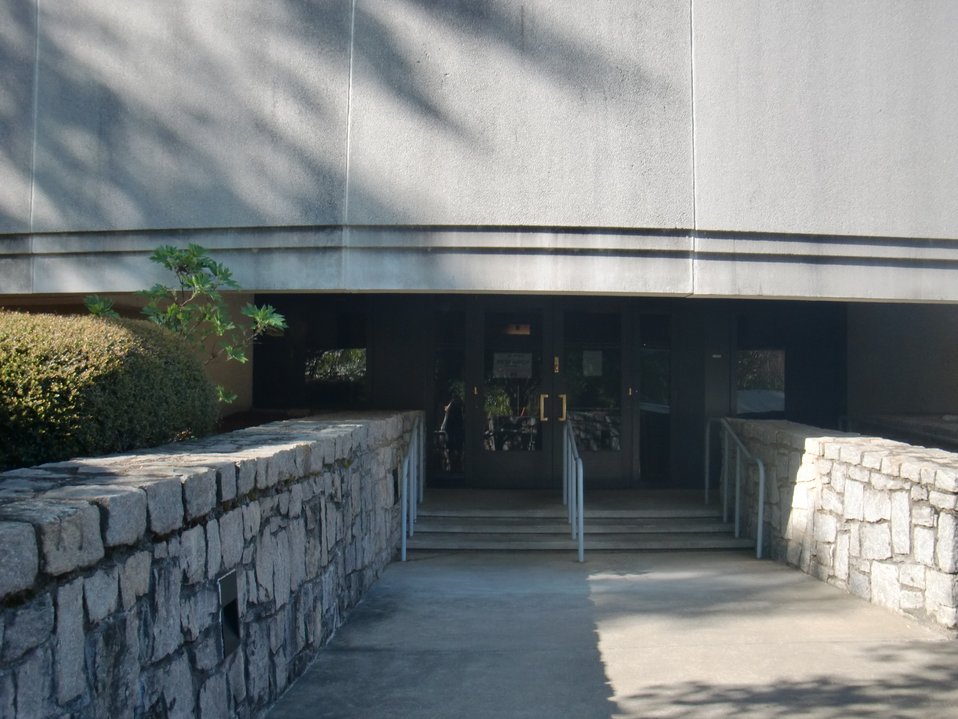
External shot of building; Location: Jimmy Carter Presidential Libray, Atlanta, GA